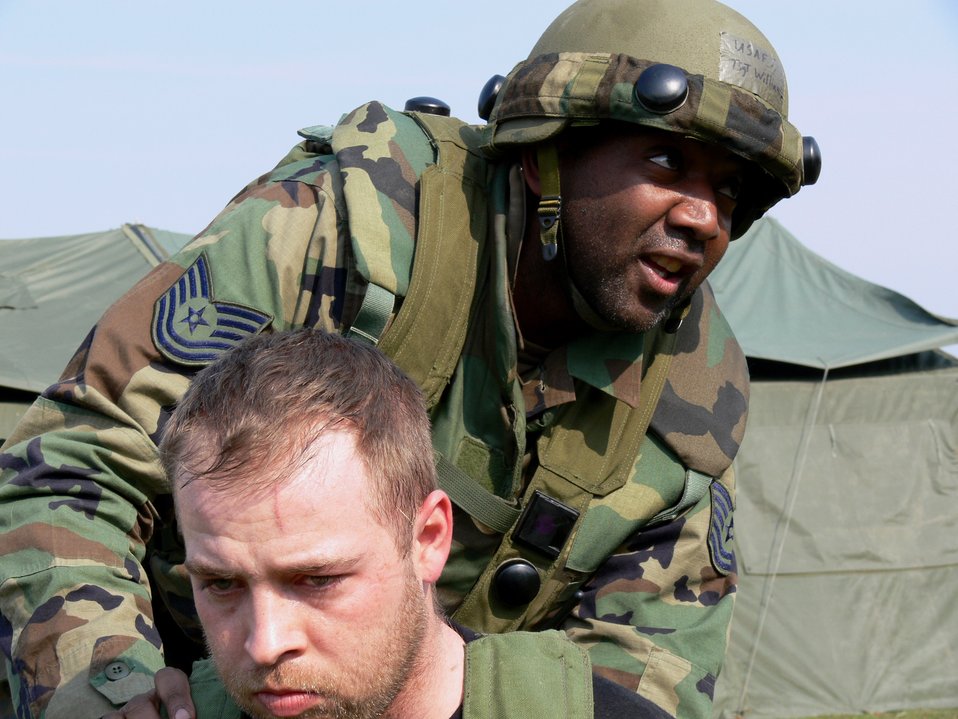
Combat comm Airmen hone skills in field training

Tech. Sgt. Jamal Williams completes a search on an insurgent during a field training exercise in Bitburg, Germany. This exercise provides Airmen with hands-on experience before ever coming into contact with real-world scenarios. Sergeant Williams is a 1st CC meteorological navigational systems maintainer.